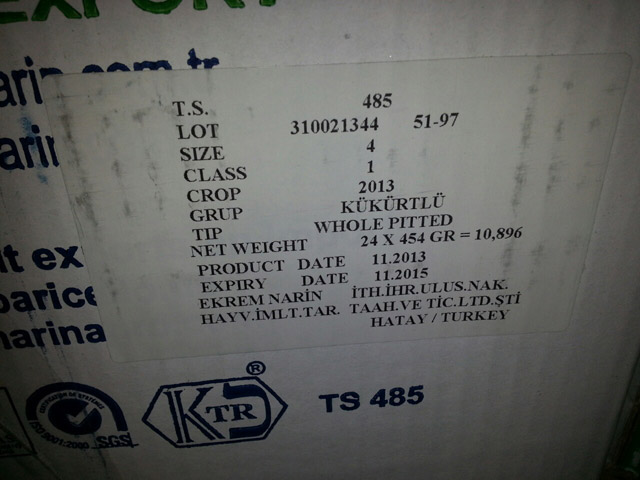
RECALLED – Turkey Dried Apricots

February 24, 2014 - Product Recall - Net Food Brand Turkey Dried Apricots Recalled Because of Undeclared Sulfites.